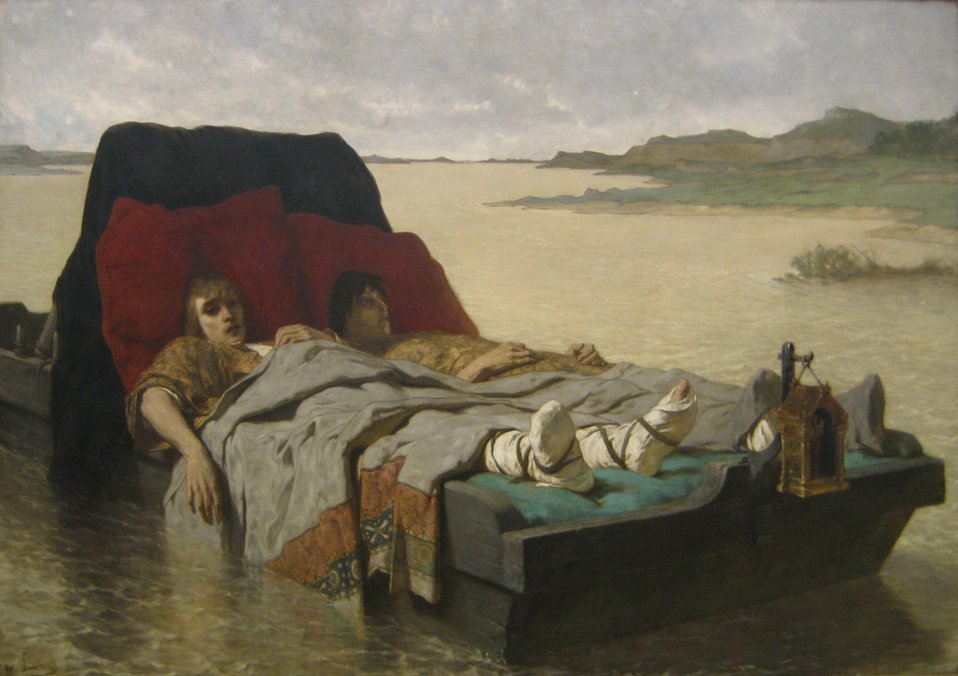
'The Sons of Clovis II', oil on canvas painting by Évariste Vital Luminais, 1880, Art Gallery of New South Wales